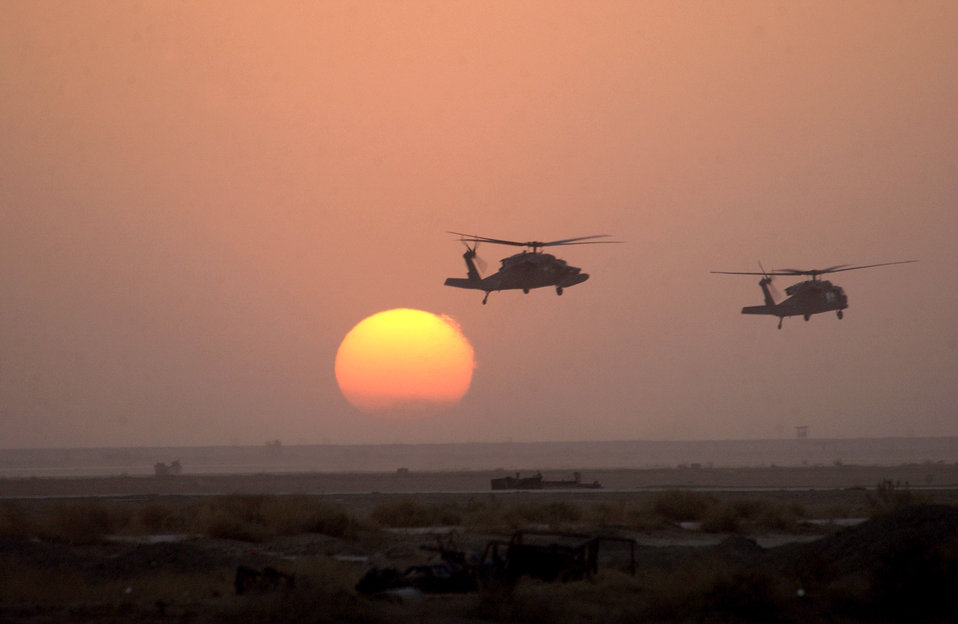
Blachawk sundown

OPERATION IRAQI FREEDOM -- Army HH-60 Blackhawk helicopters fly past the setting sun April 2, 2003 at a forward-deployed location in southern Iraq during Operation Iraqi Freedom.